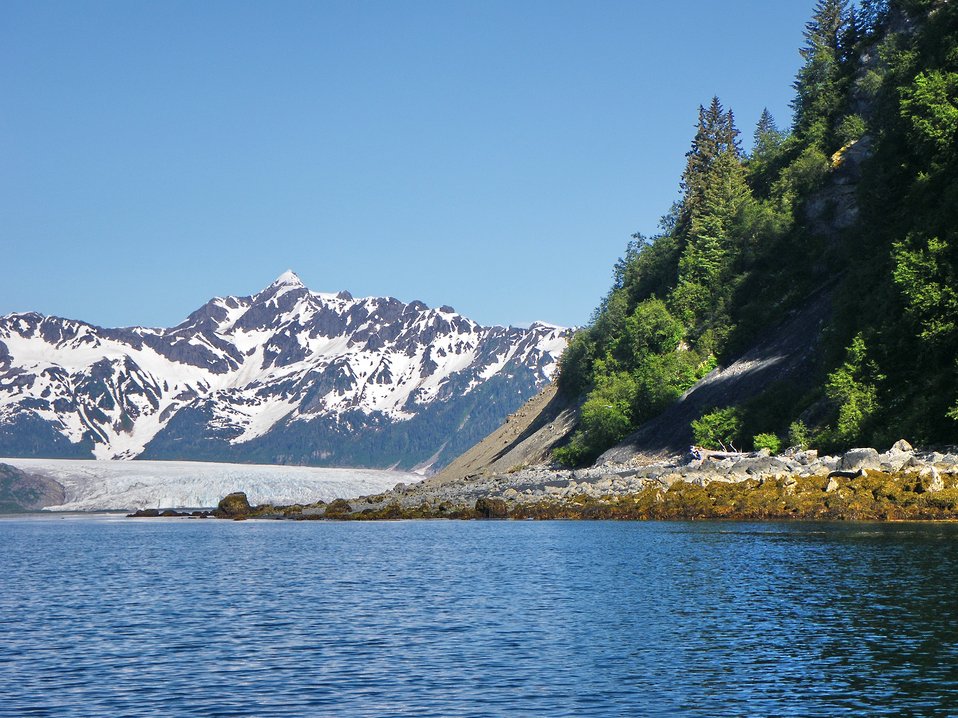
Rocky shoreline, a glacier coming to the sea, and high mountain peaks. Hogg Bay has it all.